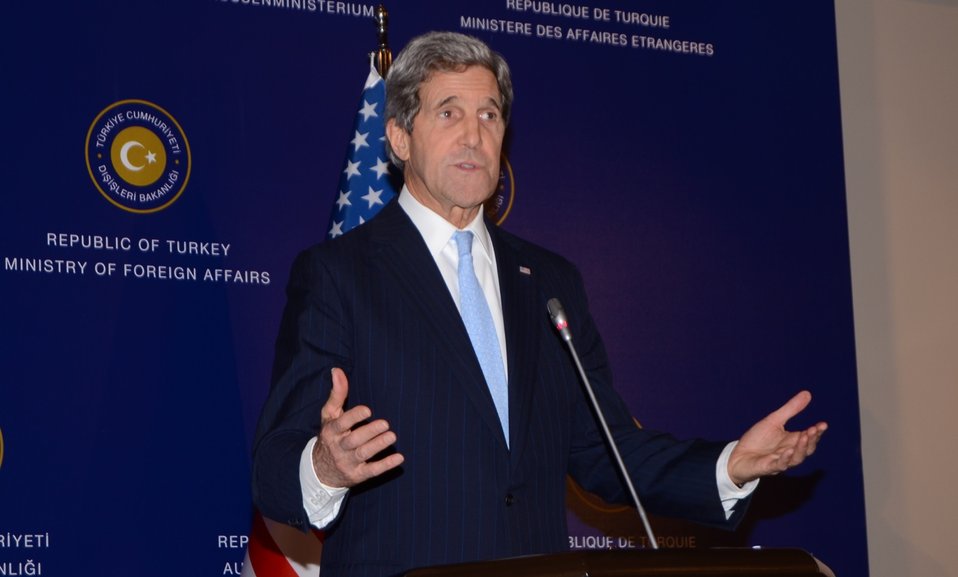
Secretary Kerry Delivers Remarks With Turkish Foreign Minister Davutoglu and Syrian Opposition Council Chairman al-Khatib

U.S. Secretary of State John Kerry delivers remarks with Turkish Foreign Minister Ahmet Davutoglu and Syrian Opposition Council Chairman Moaz al-Khatib in Istanbul, Turkey on April 20, 2013.